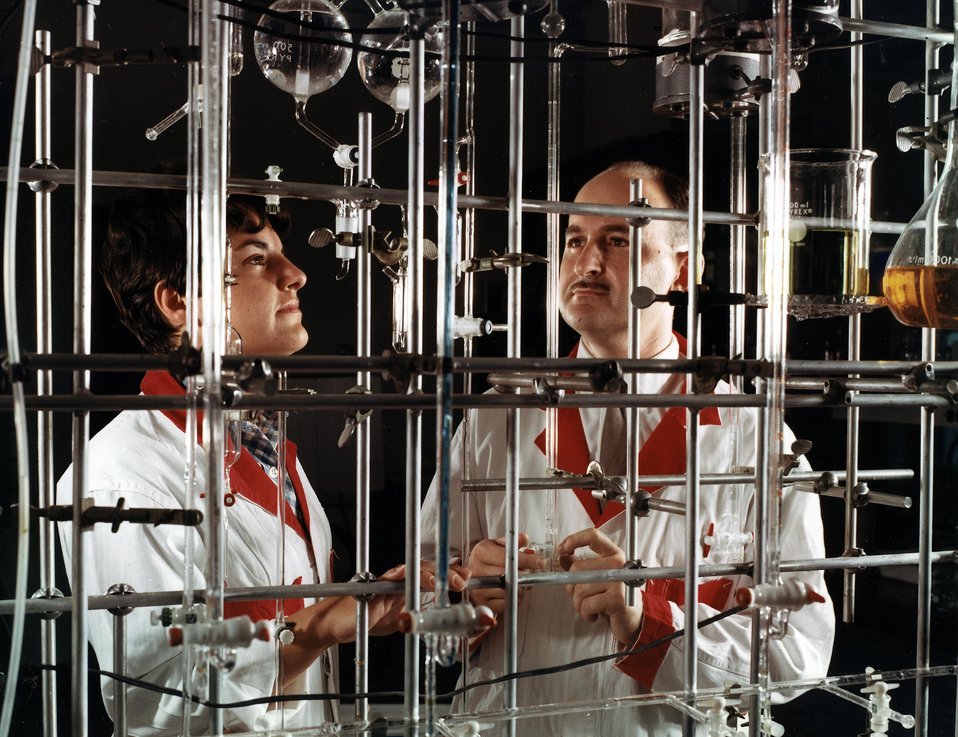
Apparatus used to handle air-sensitive solutions. c. 1966